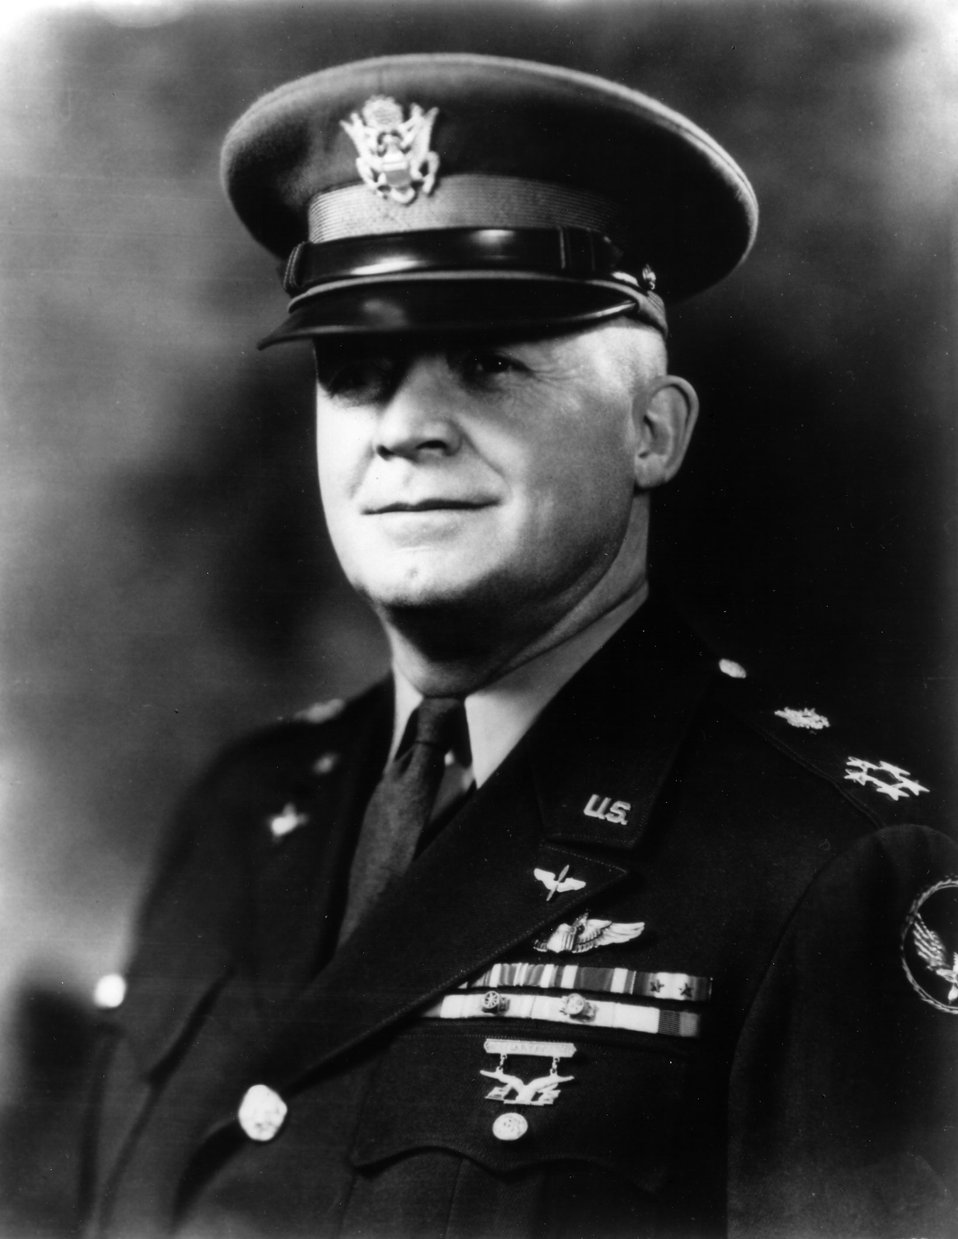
General Henry H. Hap Arnold

EARLY YEARS -- Hap Arnold was a pioneer airman who was taught to fly by the Wright Brothers, and commander of Army Air Forces in victory over Germany and Japan in World War II: born Gladwyne, Pa., June 25, 1886, died Sonoma, Calif., Jan. 15, 1950.